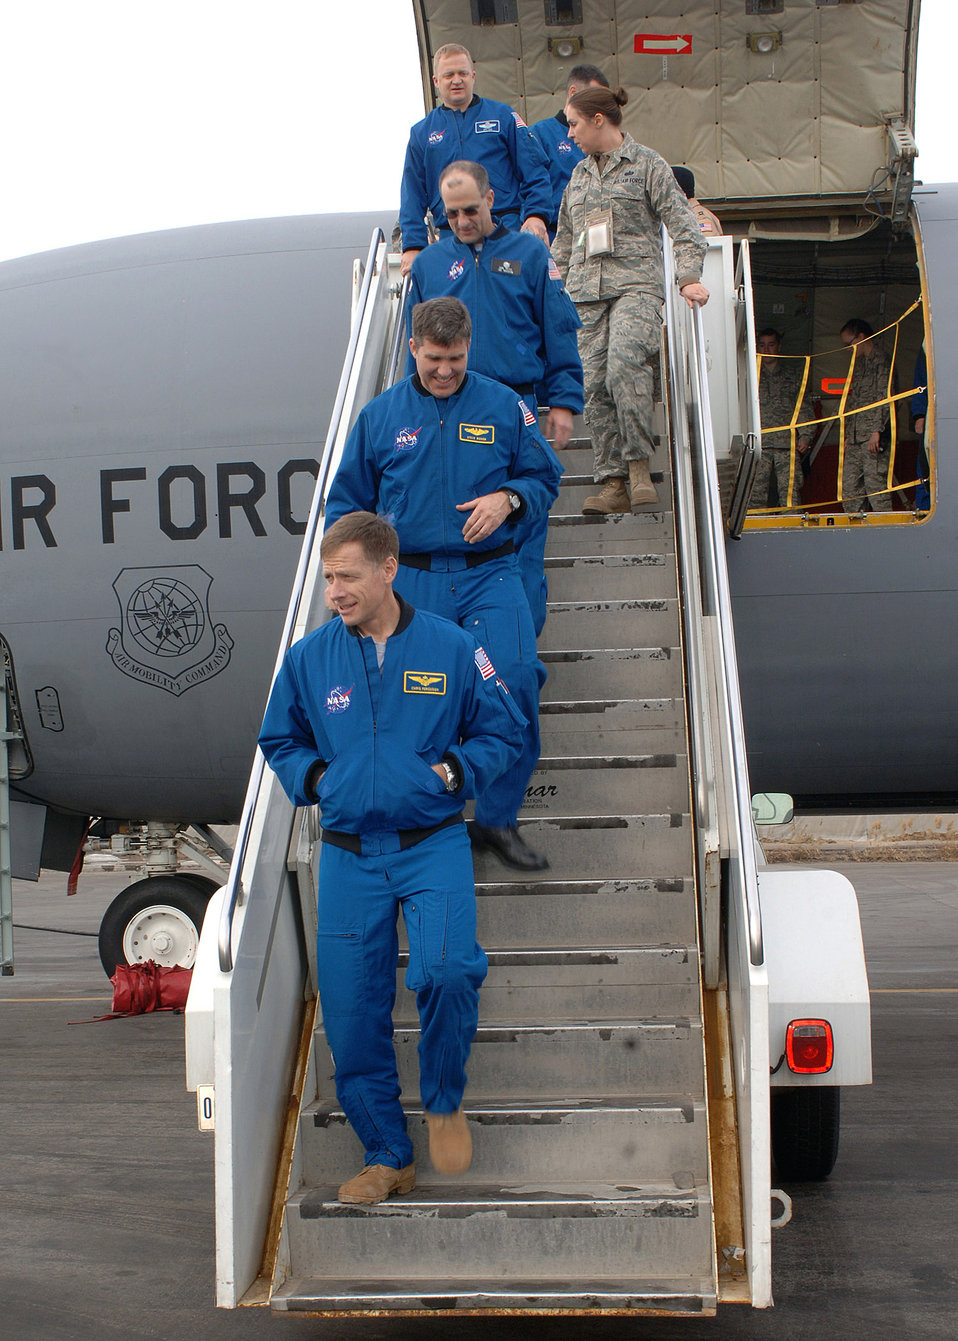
NASA astronauts touch down at Manas Air Base, Kyrgyzstan

The crew of NASA's Space Shuttle Endeavour STS-126 mission step off a KC-135 Stratotanker after a tour of the aerial refueler at Manas Air Base, Kyrgyzstan, Jan. 28. The visit was the first time NASA astronauts have toured the deployed area of operations after a mission and marked the first time astronauts have ever visited Manas AB or the country of Kyrgyzstan.